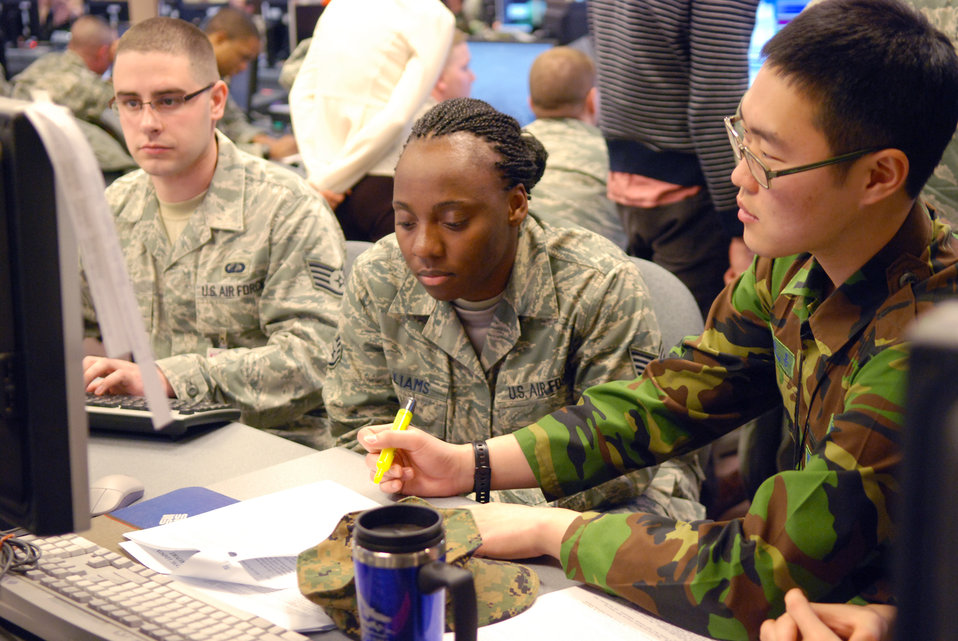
Key Resolve exercise begins at Osan AB

Staff Sgt. Hwang Song Hun works with Staff Sgts. Muneerah Williams and Michael Rowe to prepare for exercise Key Resolve Feb. 24, 2011, at Osan Air Base, South Korea. Sergeant Hwang is a South Korean air simulation specialist, and Sergeant Williams and Rowe are air operators assigned to Kunsan Air Base, South Korea.